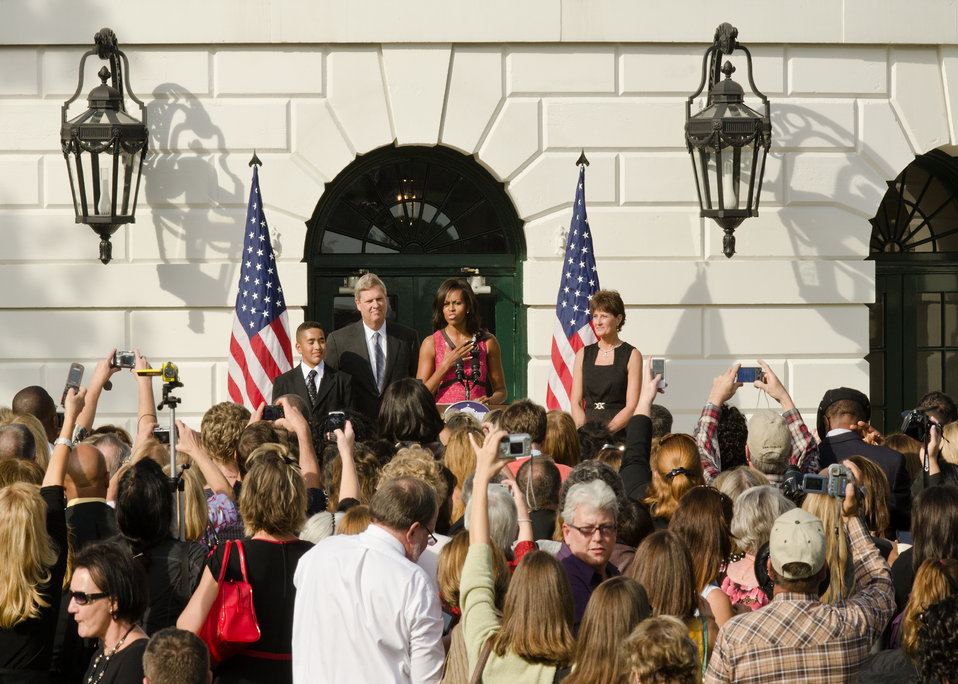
From left: Alex Roman, Walsh Elementary School, Chicago, Illinois, Agriculture Secretary Tom Vilsack, First Lady Michelle Obama and Becky Bounds, Lamar County Schools, Mississippi. Agriculture Secretary Tom Vilsack and First Lady Michelle Obama hosted a reception on the South Lawn of the White House in Washington, DC, Monday, October 17, 2011 to honor the over 1200 winners in the HealthierUS Schools Challenge that met the First Lady’s goal to double the number of participants in the HealthierUS School Challenge in a year. In February 2010, First Lady Michelle Obama introduced “Let’s Move” incorporating the HealthierUS School Challenge into her campaign to promote a healthier generation of children. The HealthierUS School Challenge recognizes elementary, middle and high schools nationwide that create healthier school environments by providing exceptional nutrition education, nutritious food and beverage choices, physical education and opportunities for physical activity. Since the beginning of the HealthierUS School Challenge in 2004, awards have been given to schools in 44 states. As of September 28, 2011, there are 1631 schools certified. A tool kit on how to become a Healthier U.S. School can be found at www.fns.gov.